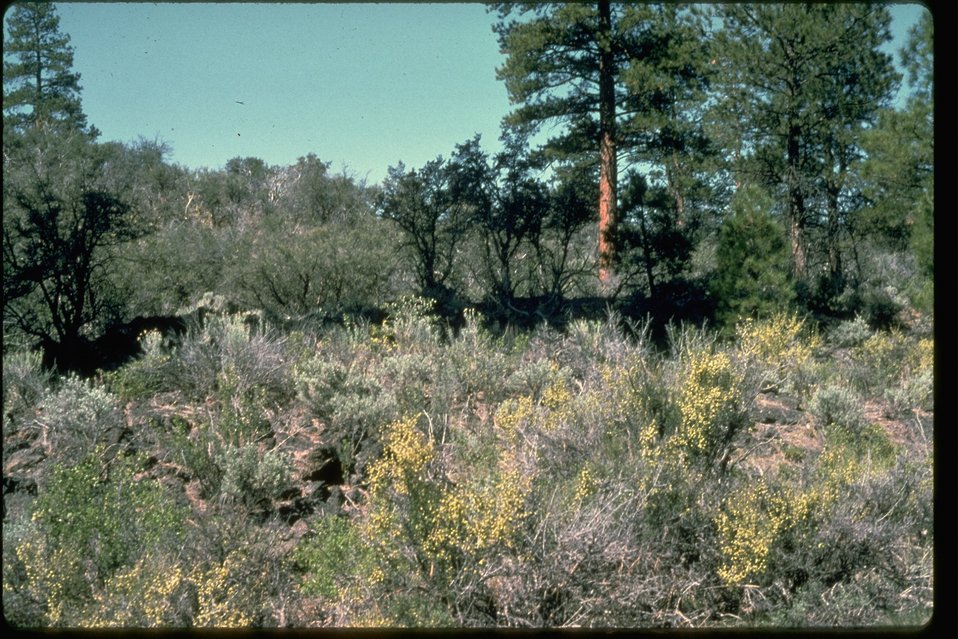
The North end of the Devil's Garden Lava Bed Wilderness Study Area. OR 1-2